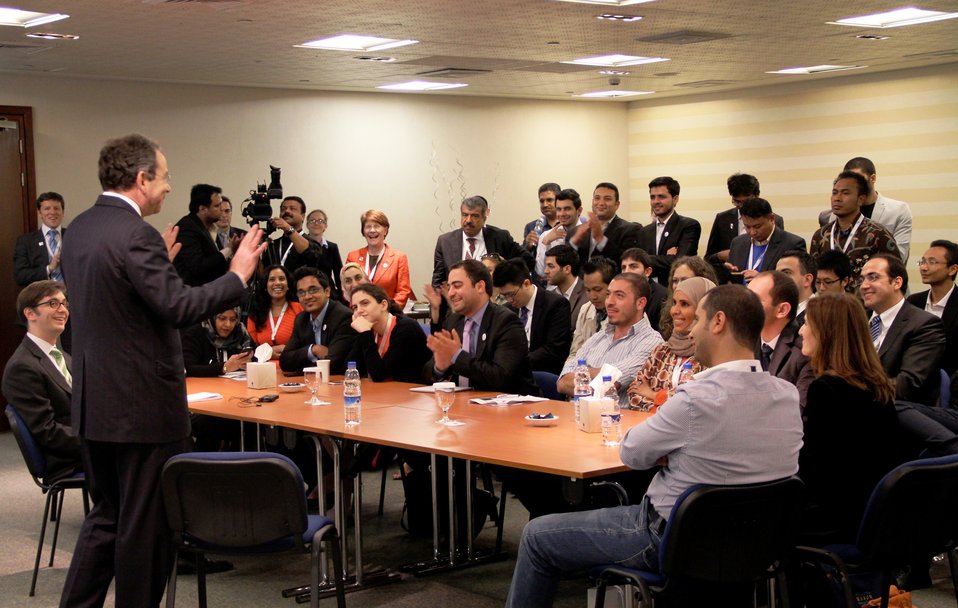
Deputy Secretary Nides With Young Entrepreneurs

Deputy Secretary of State Thomas Nides meets with young entrepreneurs from the State Department-sponsored Global Innovation through Science and Technology (GIST) initiative on the sidelines of the Global Entrepreneurship Summit in Dubai, United Arab Emirates, December 12, 2012.